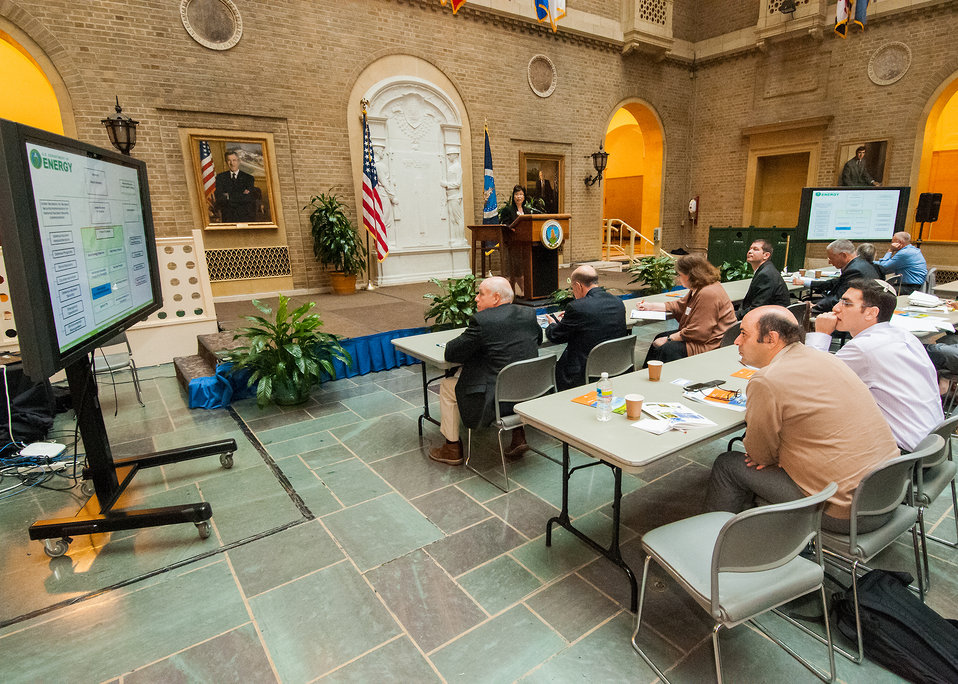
Department of Energy (DOE) Biological and Environmental Research Associate Director Dr. Sharlene Weatherwax explains the Bioenergy research agenda of the Office of Biology and Environmental Research and Bioenergy Research Centers of the DOE at the U.S.-Israel Bio-Challenge Symposium at the U.S. Department of Agriculture (USDA) in Washington, D.C. on Thursday, Apr. 18, 2013.